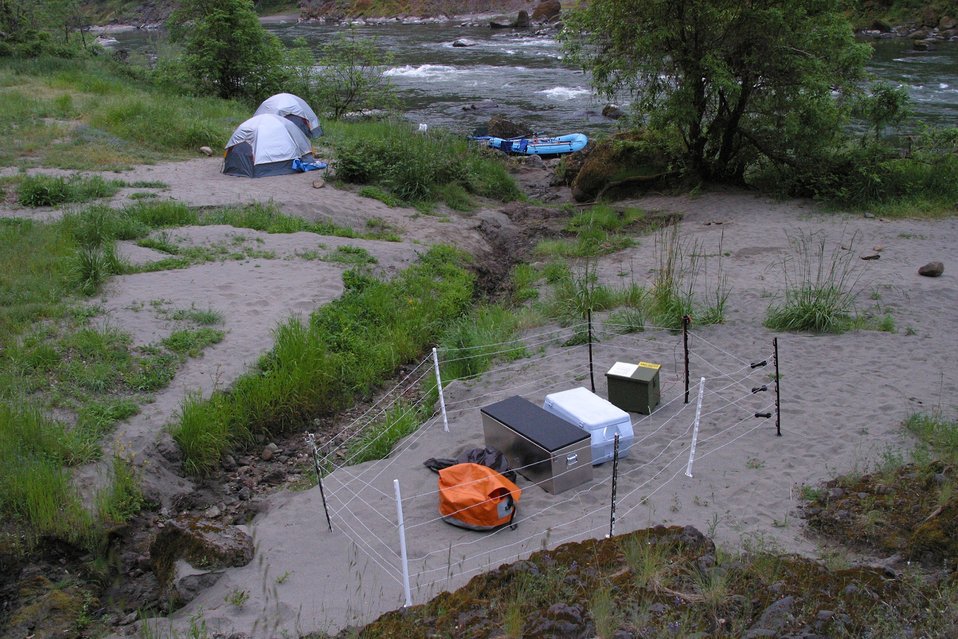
Wild section of the Rogue River from Grave Creek to Foster Bar May 19 to May 22.